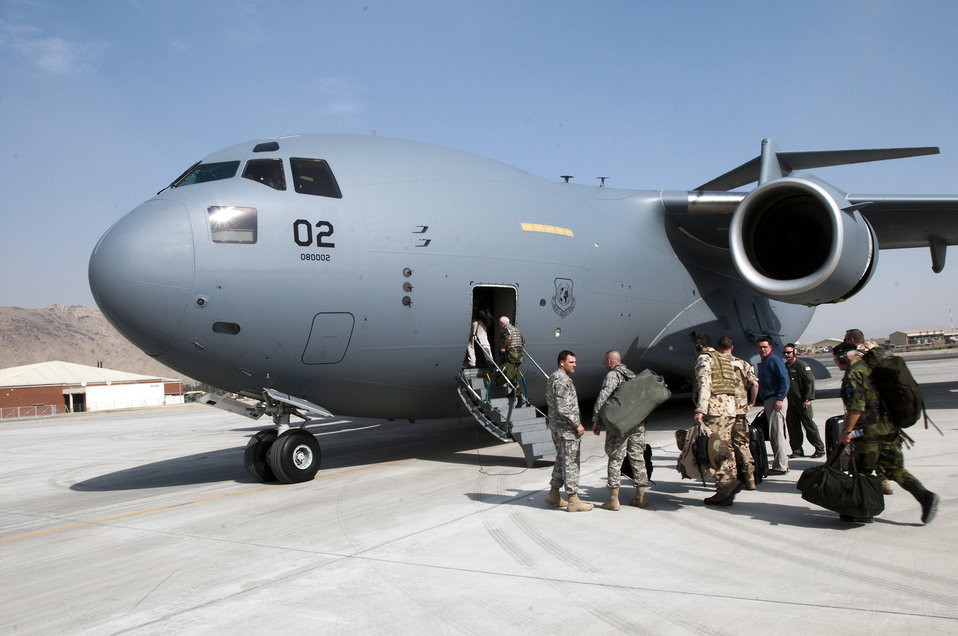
Multinational Strategic Airlift Capability supports NATO committee visit to Afghanistan

Members of the NATO International Military Committee received updates on the ground about the mission in Afghanistan after receiving airlift support from a C-17 from the multinational Heavy Airlift Wing, Papa Air Base, Hungary. The newly formed HAW, flew one of its three C-17 Globemaster IIIs into Kabul, Afghanistan, with military representatives from all 28 NATO member states as well as those from the 14 non-NATO nations who also contribute forces to ISAF. The consortium includes NATO member nations Bulgaria, Estonia, Hungary, Lithuania, the Netherlands, Norway, Poland, Romania, Slovenia and the U.S., as well as Partnership for Peace nations Finland and Sweden.